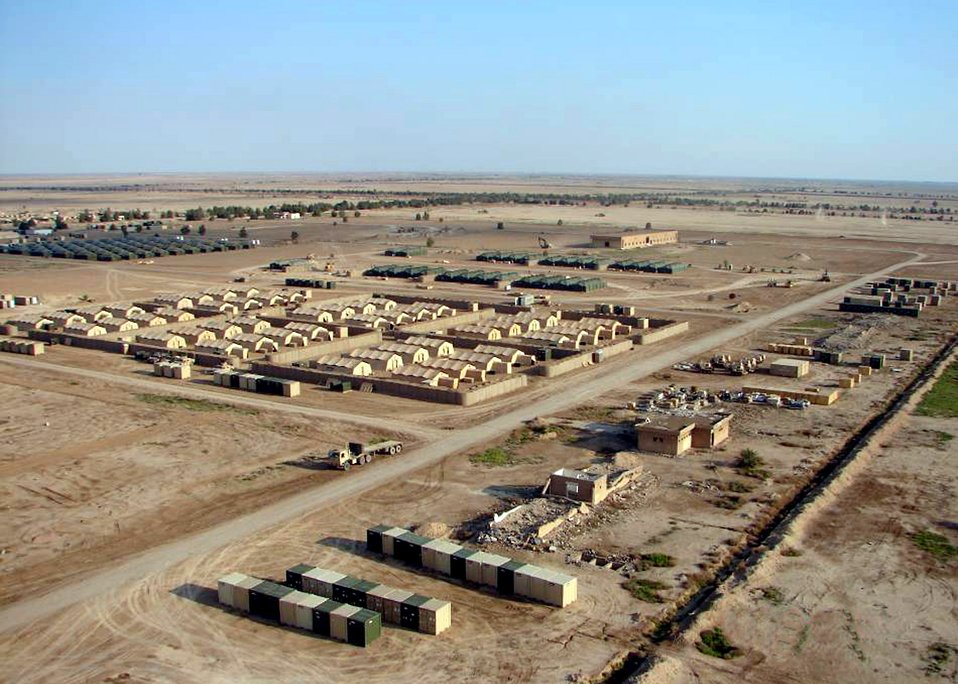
RED HORSE helps build combat brigade base in 45 days

Pictured is an aerial view of Forward Operating Base Hammer, Iraq. Airmen from the 557th Expeditionary RED HORSE Squadron and Soldiers from the 92nd Engineer Battalion's